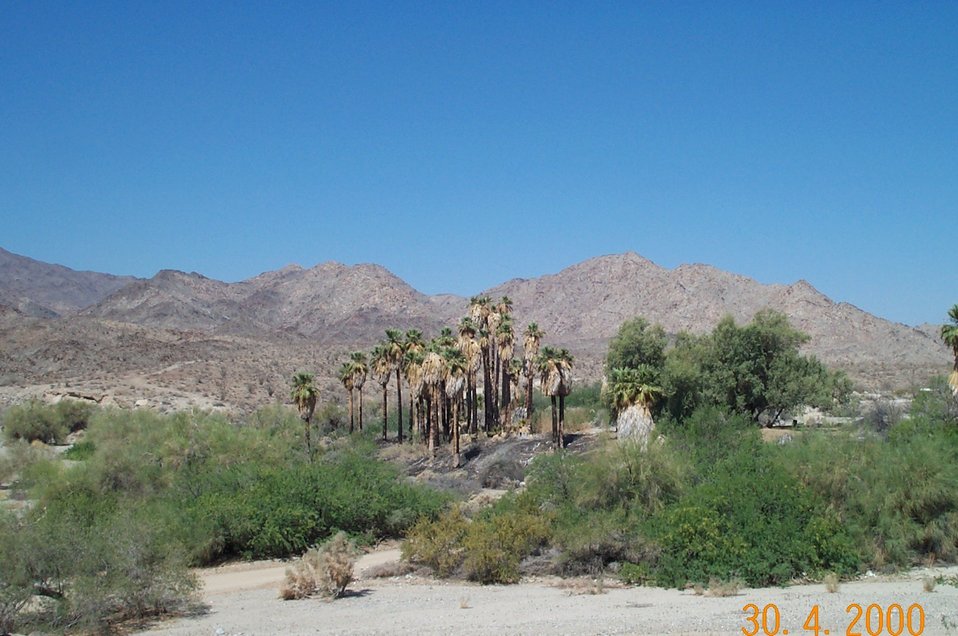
Corn spring (along wilderness boundary; BLM campground for wilderness visitors)